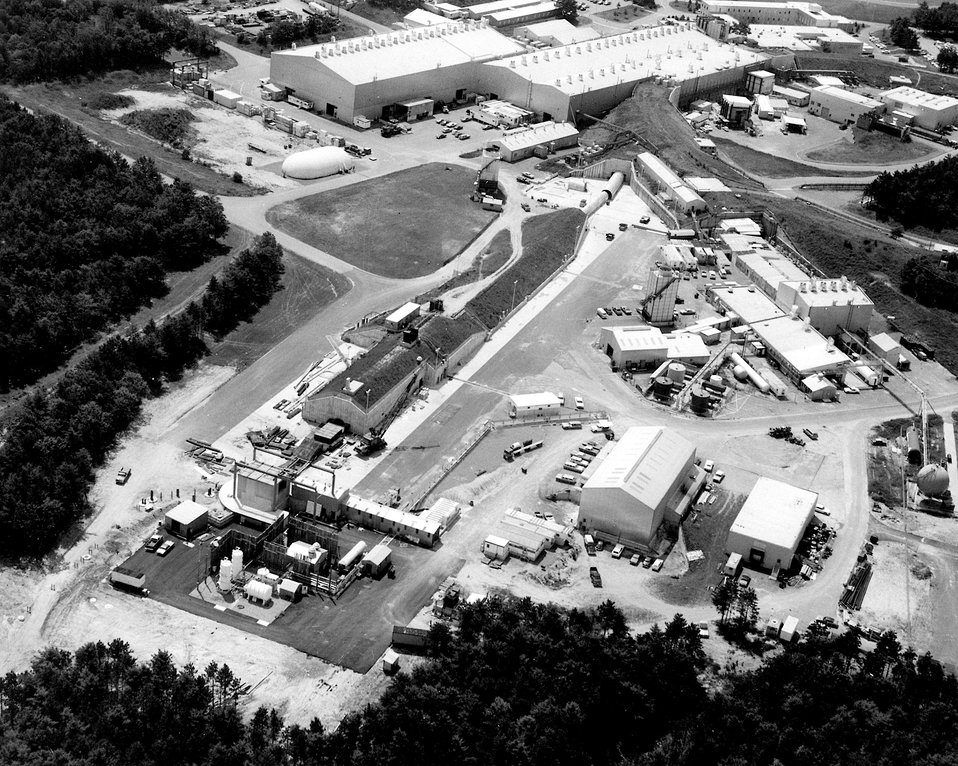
Aerial view of the Alternating Gradient
Synchrotron at the U.S. Atomic Energy Commission's
Brookhaven National Laboratory.